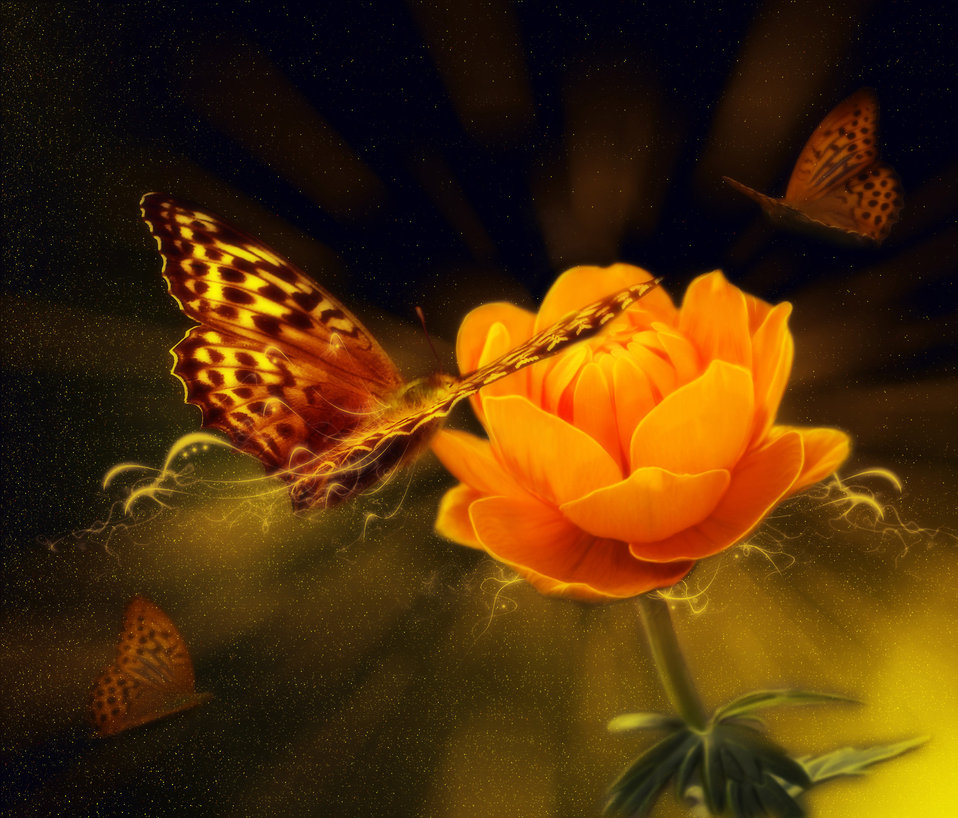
Background with flower and butterfly

Beautiful backdrop for postcards and greetings with flowers and butterflies.